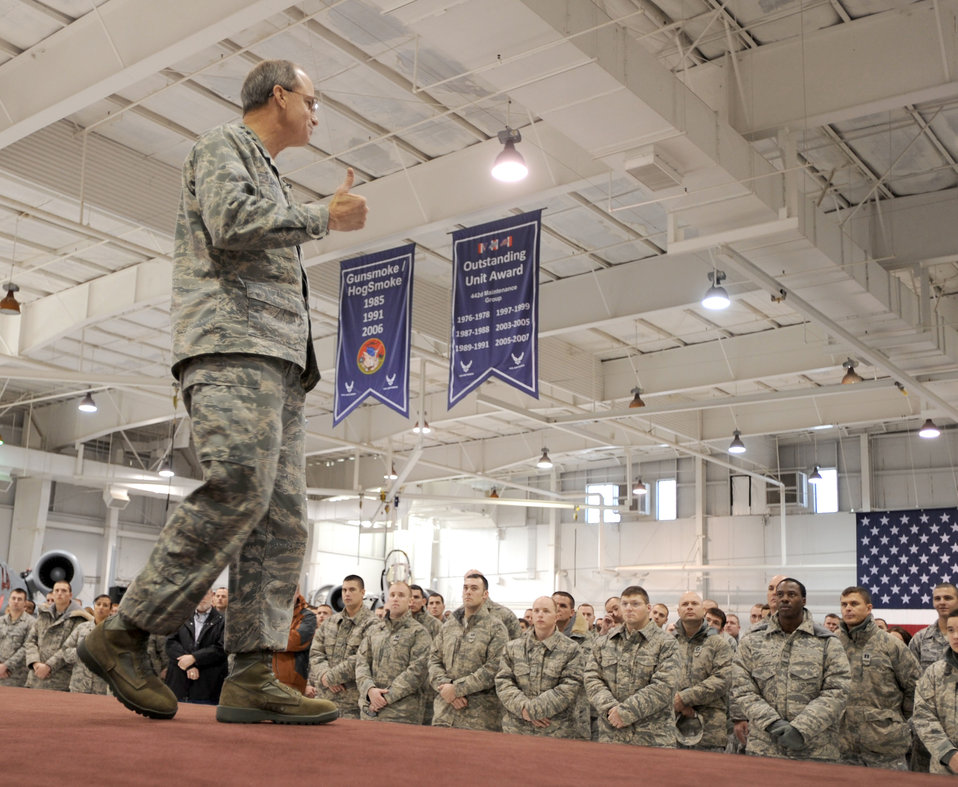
No higher calling

Gen. Kevin P. Chilton speaks Dec. 1, 2010, during a commander's call at Whiteman Air Force Base, Mo. General Chilton's speech focused on the importance of Air Force Global Strike Command and nuclear deterrence. General Chilton is the U.S. Strategic Command commander.